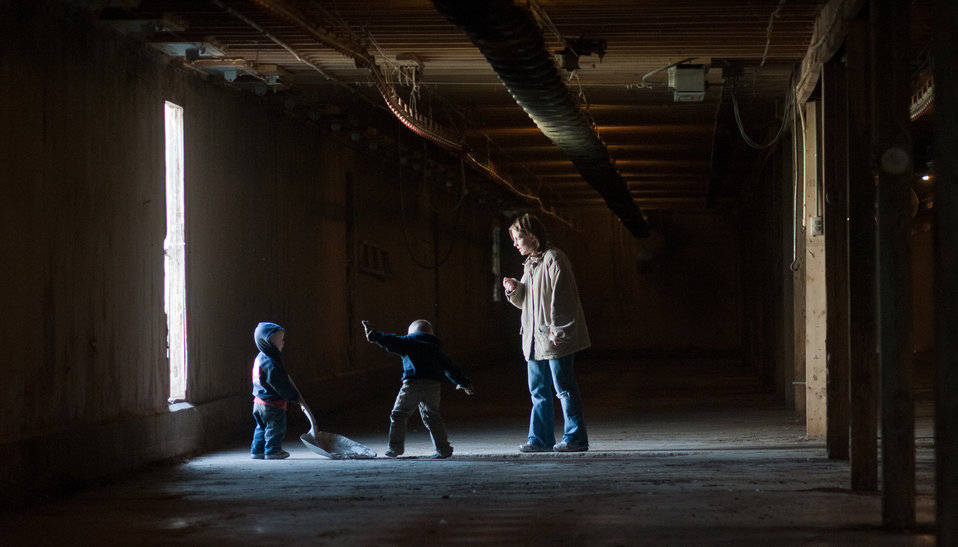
Gavin (2, right) and Grant Molnar (5, left) use a shovel to scour the floor for debris at the Roxanne Molnar Farm on April 21, 2011, in Grantville, PA. Roxanne and Matthew Molnar have an 80,000 poultry farm and were recipients of a $20,000 Rural Energy for America Program (REAP) grant. The money is a portion of the cost to modernize the second of two 40,000 chicken capacity chicken houses. Chickens need to be kept at a comfortable temperature to remain productive. New radiant heaters keep the chickens warm during Pennsylvania winters. On warm days, ceiling vents provide passive venting of heat out of the building; when chicken house temperatures are estimated to be above 90 degrees, fans come on, pulling air through water evaporator elements lowering air temperature down 10-15 degrees and flows along the chicken house's length, in effect a tunnel of cooled air. The benefits to the chickens are heat and excess moisture removal; minimized dust and odor; limits buildup of ammonia and carbon dioxide; and provides oxygen for respiration. All these systems are computer controlled allowing owner, Roxanne Molnar to run the farm by herself and raise two small boys Gavin (2) and Grant (5). Husband, Matthew works off the farm and frequently travels, so along with the demands of parenting and manually controlling fans, vents, and having to remove the 80,000 chickens from their feeders and moving them around to cool them was an increasingly daunting task. The computer controls of the new system automate many of the daylong tasks allowing the Molnar’s to run their family farm. USDA Photography by Lance Cheung.